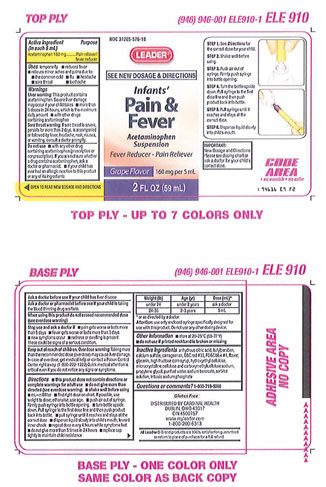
Recalled - Acetaminophen infant suspension liquid

November 1, 2013 – Product Recall – Perrigo Initiates Nationwide Voluntary Product Recall of Acetaminophen Infant Suspension Liquid, 160 Mg/5 Ml, Due to a Potential Defect with the Co-packaged Oral Syringe.